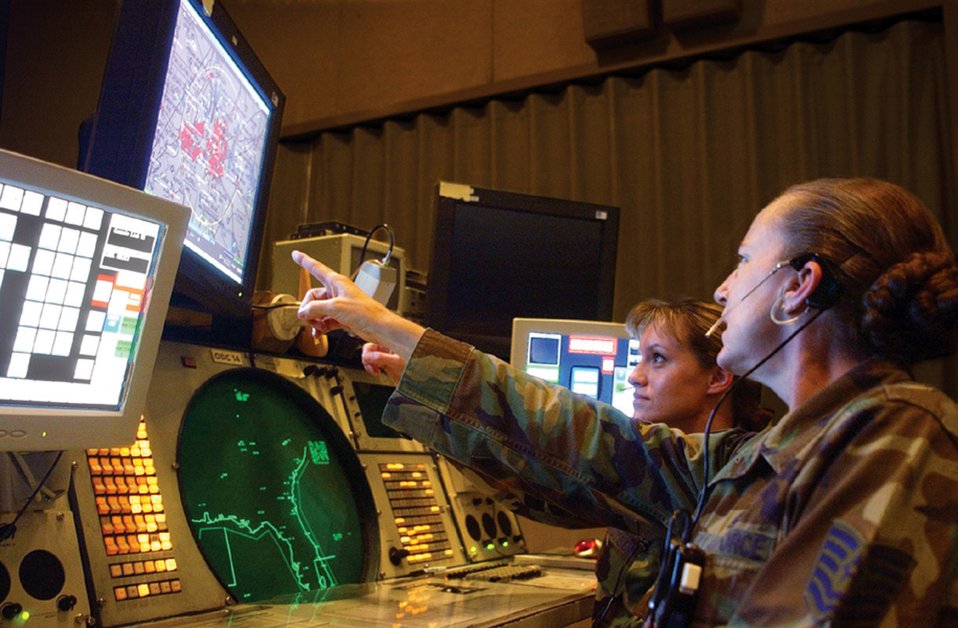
1st Air Force transitions to warfighting headquarters

TYNDALL AIR FORCE BASE, Fla. -- Tech. Sgt. Kathleen O'Brien (right) points out tracks of interest to Tech. Sgt. Christie Watson in the 1st Air Force and Continental U.S. North American Aerospace Defense Command Region combined air operations center here. The center will be one of three primary elements in the new Air Force North warfighting headquarters.